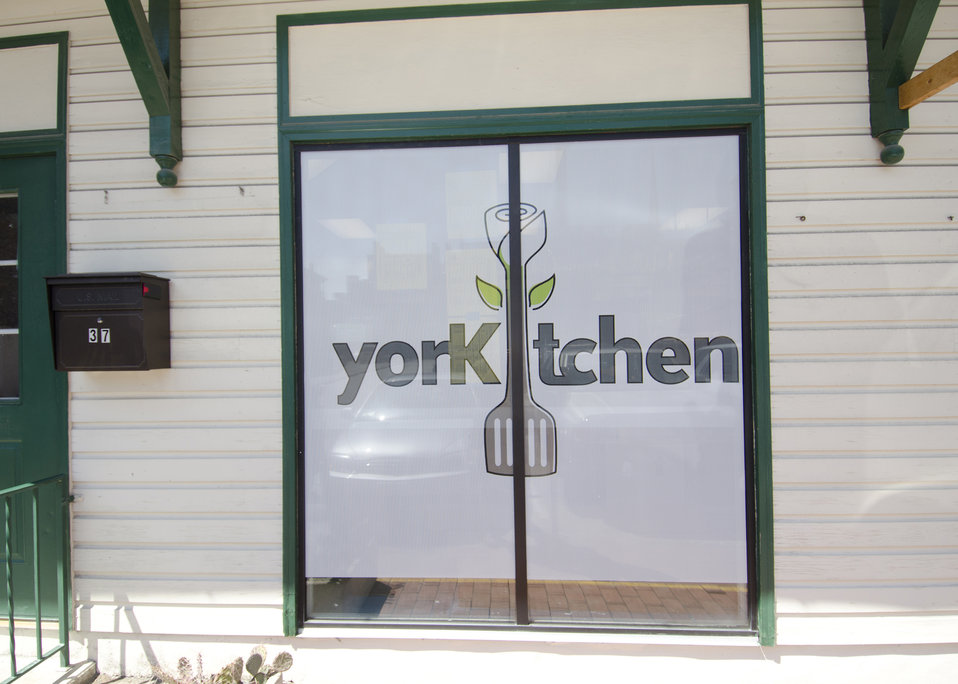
YorKitchen is a shared incubator kitchen that received partial funding through the U. S. Department of Agriculture’s (USDA) Rural Development (RD) Rural Business Enterprise Grant (RBEG) program. This program provides grants for rural projects that finance and facilitate development of small and emerging rural businesses, distance- learning networks, and employment related adult education programs. YorKitchen is a commercially equipped and fully licensed kitchen in which new entrepreneurs can prepare new products without the associated start up costs. This “incubator kitchen” provides full business support to include invoicing, accounting, advertising, outreach, and marketing for entrepreneurs. The YorKitchen is housed in the annex of Central Market in York, PA. This location offers local agricultural producers increased opportunities to develop new value-added products with their produce.